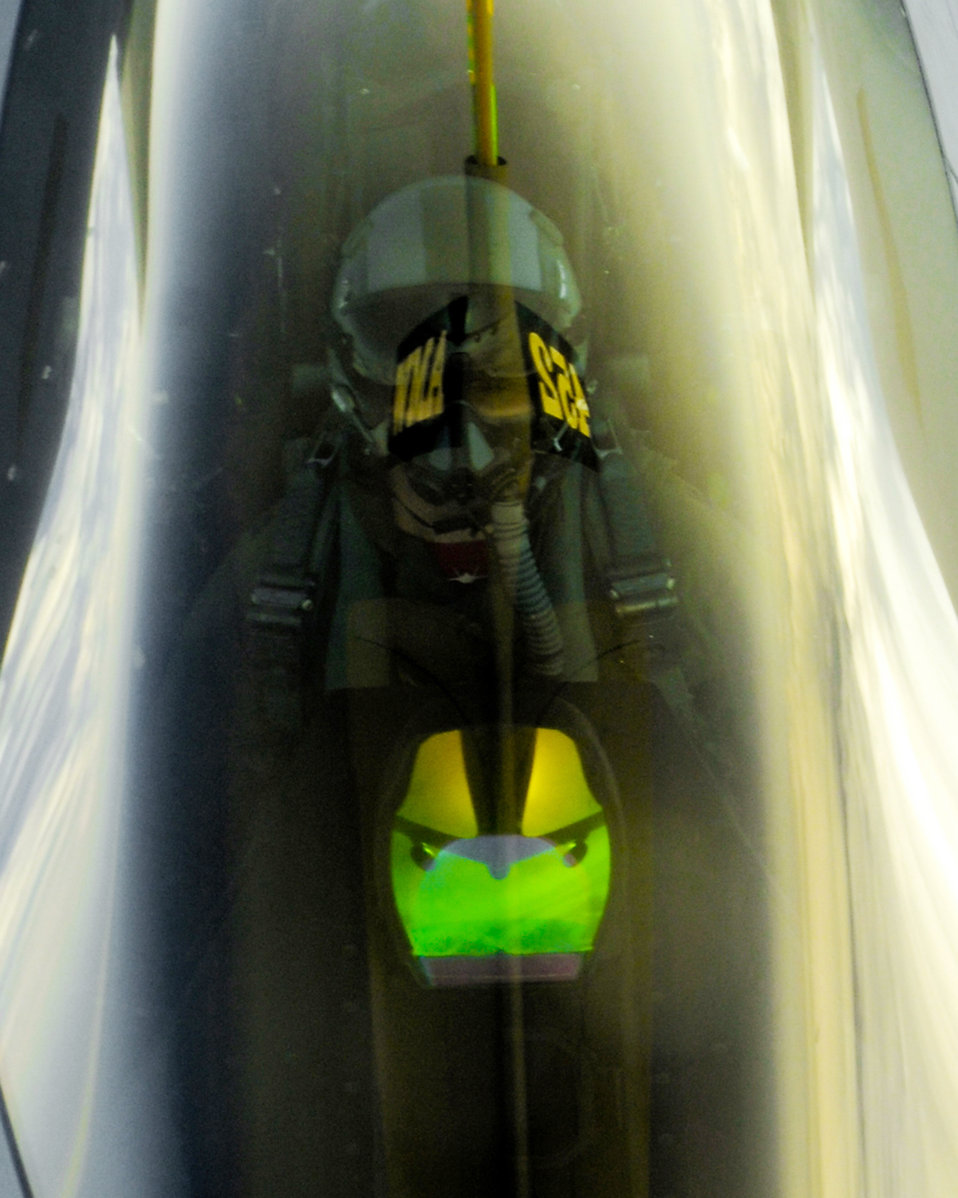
Time for fuel

An F-22 Raptor approaches a KC-135 Stratotanker during an aerial refueling mission June 19 as part of Northern Edge 2009 near Eielson Air Force Base, Alaska.